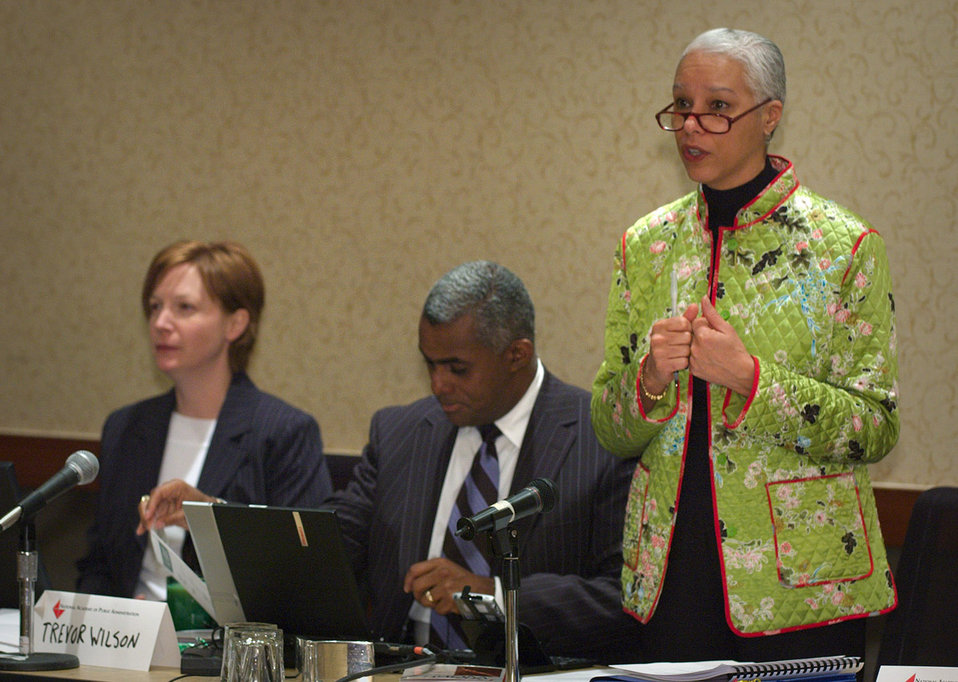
This photograph shows members of the panel attending the 2005, 'Symposium on Diversity, Leadership Development and Succession Planning' at the CDC. Pictured here were (left to right) Julie Carswell, Ph.D., Dir. of Research and Innovation, TWI, Inc.; Trevor Wilson, President, TWI, Inc.; Ann Goode, NAPA Proj. Manager while she was delivering a number of salient points.